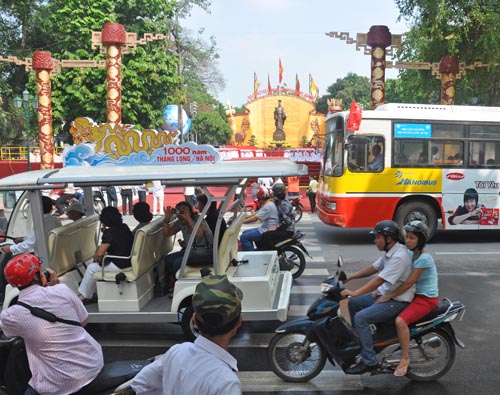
Hanoi bustles during 1,000-year anniversary in October, 2010.